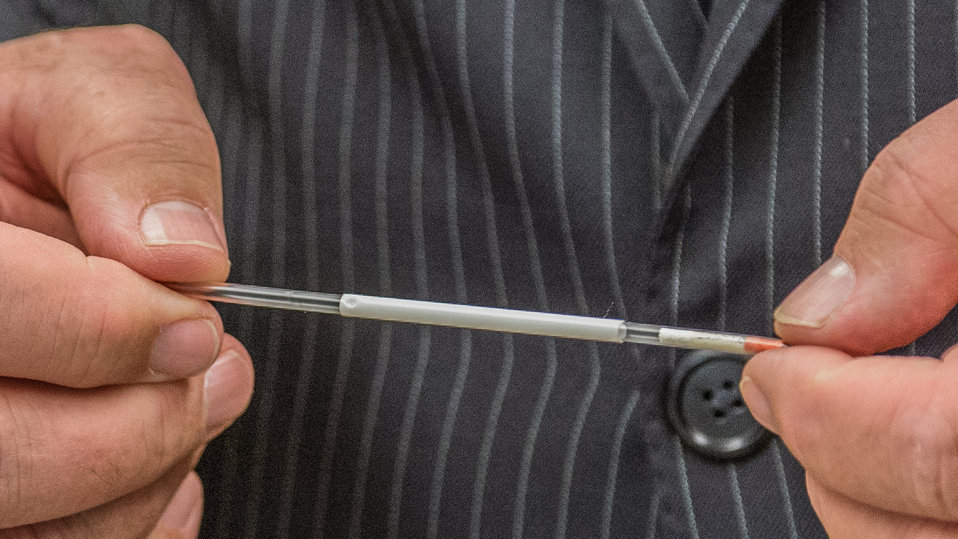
Agriculture Secretary Tom Vilsack examines a sperm storage straw used for in liquid nitrogen storage, during his visit of the Agriculture Research Service (ARS) National Center for Genetic Resources Preservation (NCGRP), Population Genetics and Genomics Laboratory room, in Ft. Collins, CO, on Wednesday, Nov. 6, 2013.